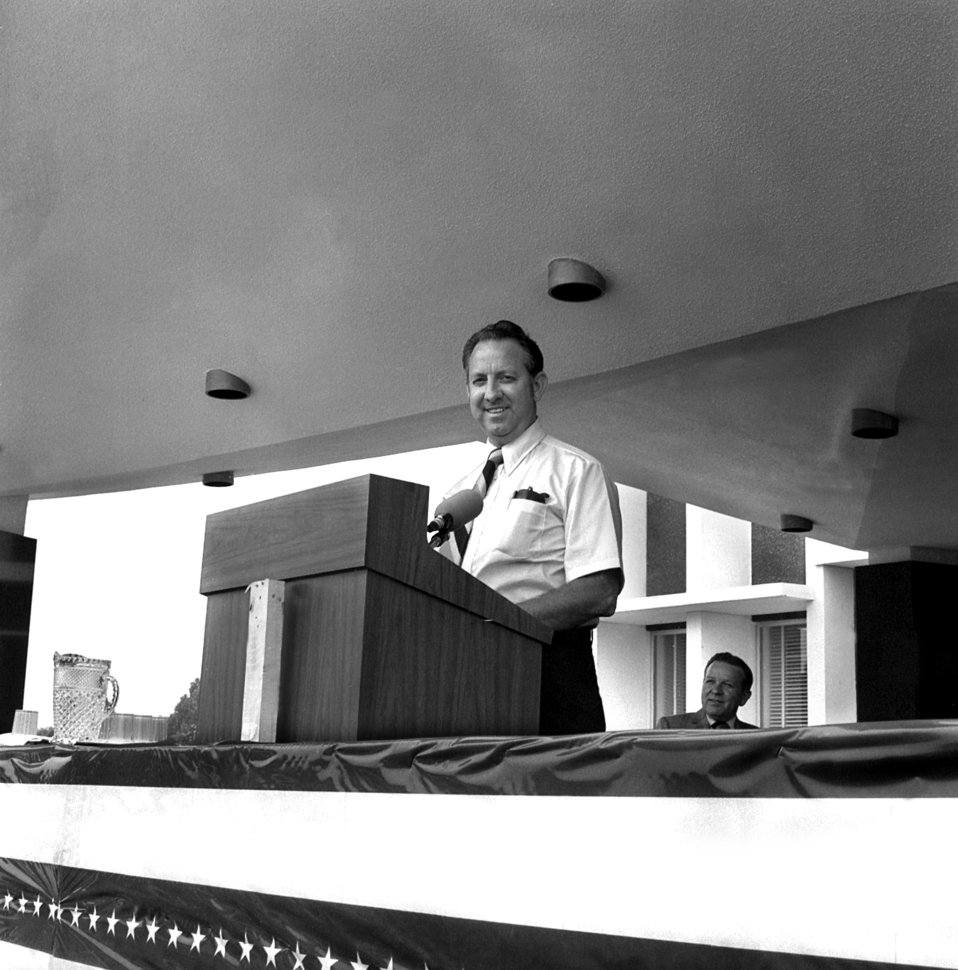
Formal Dedication New AEC (Atomic Energy Commision) - FOB (Federal Office Building) Oak Ridge

70-173d DOE Photo by Frank Hoffman
Formal Dedication New AEC (Atomic Energy Commision) - FOB (Federal Office Building) Oak Ridge Tennessee 6-27-1970